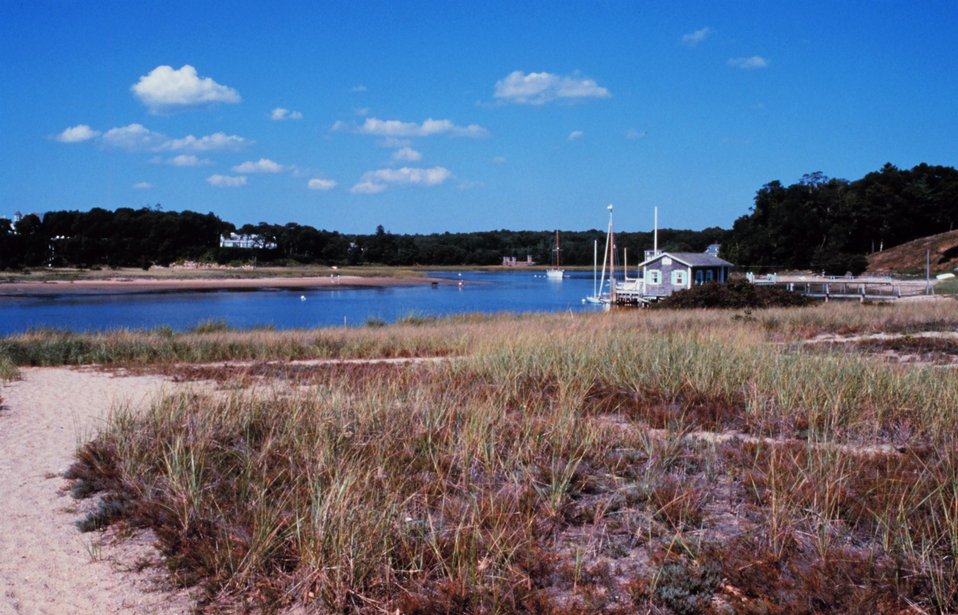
Squeteauge Harbor, North Falmouth/Bourne